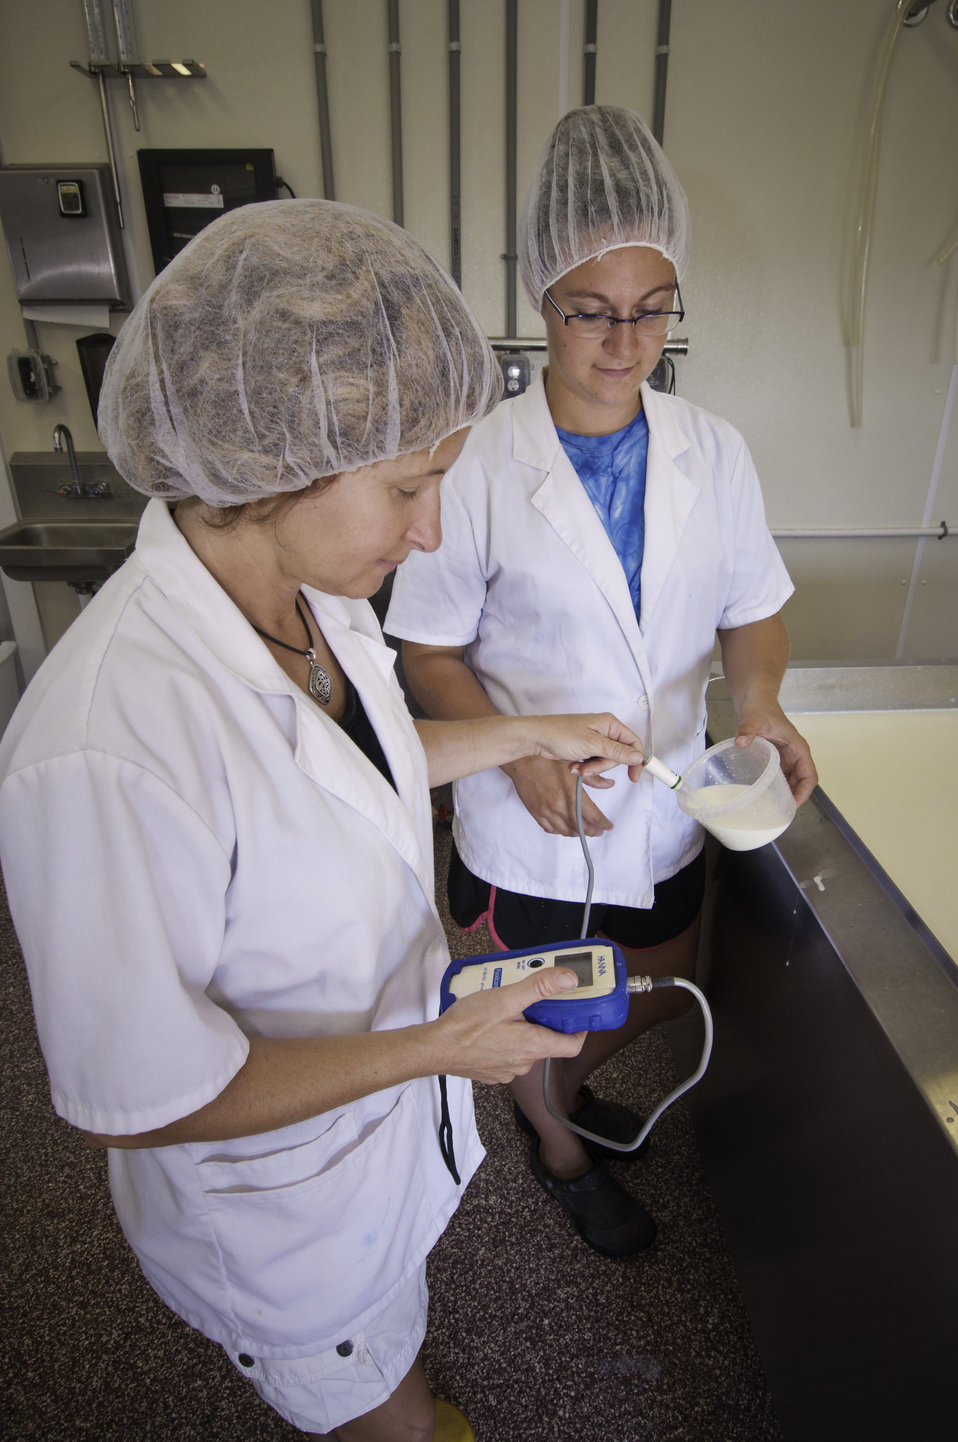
Chapel’s Country Creamery owner Holly Foster and Chapel’s Country Creamery farm manager Courtney Biggs in Easton, MD check the PH of fresh raw milk used to produce artisanal cheeses at the dairy. The dairy uses fresh raw milk 12-24 hours old. The milk is all-natural and contains no synthetic hormones, antibiotics, or chemical compounds. The 1150 pounds of milk in the vat will be used to make the dairy’s “Bay Blue” Cheese.